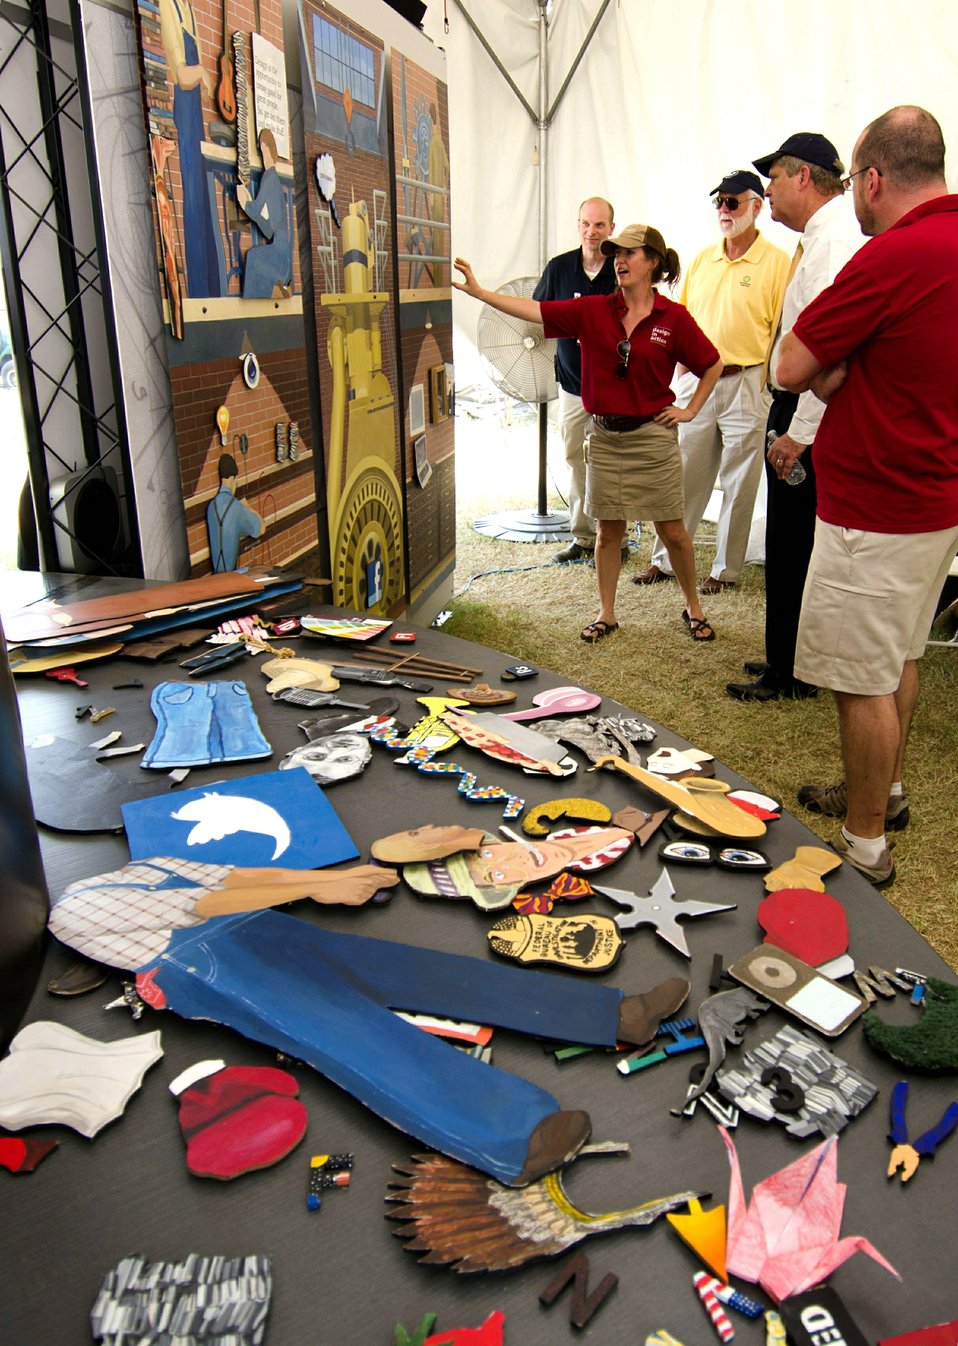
Agriculture Secretary Tom Vilsack (white shirt) listens to Iowa State University Integrated Studio Arts lecturer Jennifer Drinkwater in her Morrill Hall interactive studio project, 'Working Over Wood: Recomposing the Grant Wood Murals.' Visitors can recompose the nine-panel 1934 Grant Wood mural, 'When Tillage Begins, Other Arts Follow,' by positioning painted magnetic pieces in a metal panel, reflecting their own interpretations at the 2012 Smithsonian Folklife Festival, on the National Mall in Washington, D.C. on Friday, June 29, 2012. The University says, “Iowa State’s folklife festival exhibit highlights the central role of design in the land-grant mission, and extension’s past, present and the future impact on communities. It demonstrates a unique partnership between the College of Design and Extension and Outreach in applying creative problem solving society’s complex challenges. The exhibit, “Transforming Communities: Design in Action,” is inspired by Abraham Lincoln’s 1862 national call to “think anew and act anew” to solve the monumental challenges of the era that spawned the Morrill Act. It features examples of the university's completed and ongoing projects in Iowa communities, touch screen workstations with games for children and adults, and interactive activities with Iowa State faculty and staff.” One of the three themes this year is “Campus and Community.” It celebrates the 150 years of the USDA and the Land-Grant University System. The U.S. Department of Agriculture (USDA) and the Land-Grant system extend education across the country, contributing to American agriculture success and rural prosperity. “Campus and Community” has demonstrations, discussions, hands-on activities, and entertainment to that showcase the many ways that this partnership works to improve American agriculture and rural life.